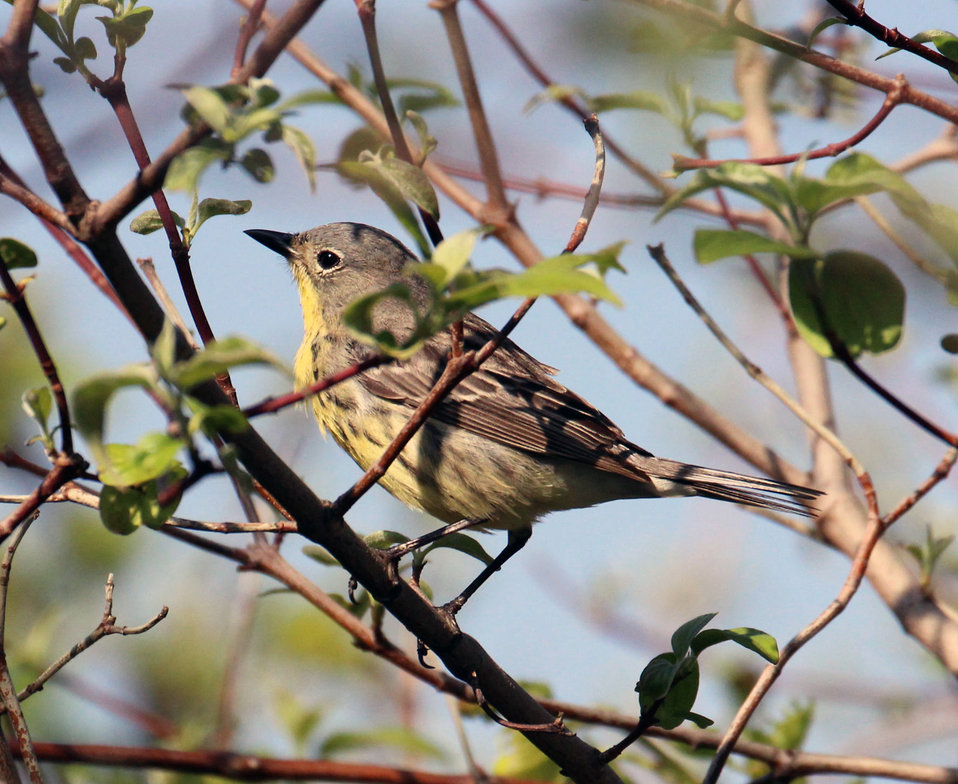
Female Kirtland's Warbler at Cedar Point National Wildlife Refuge.